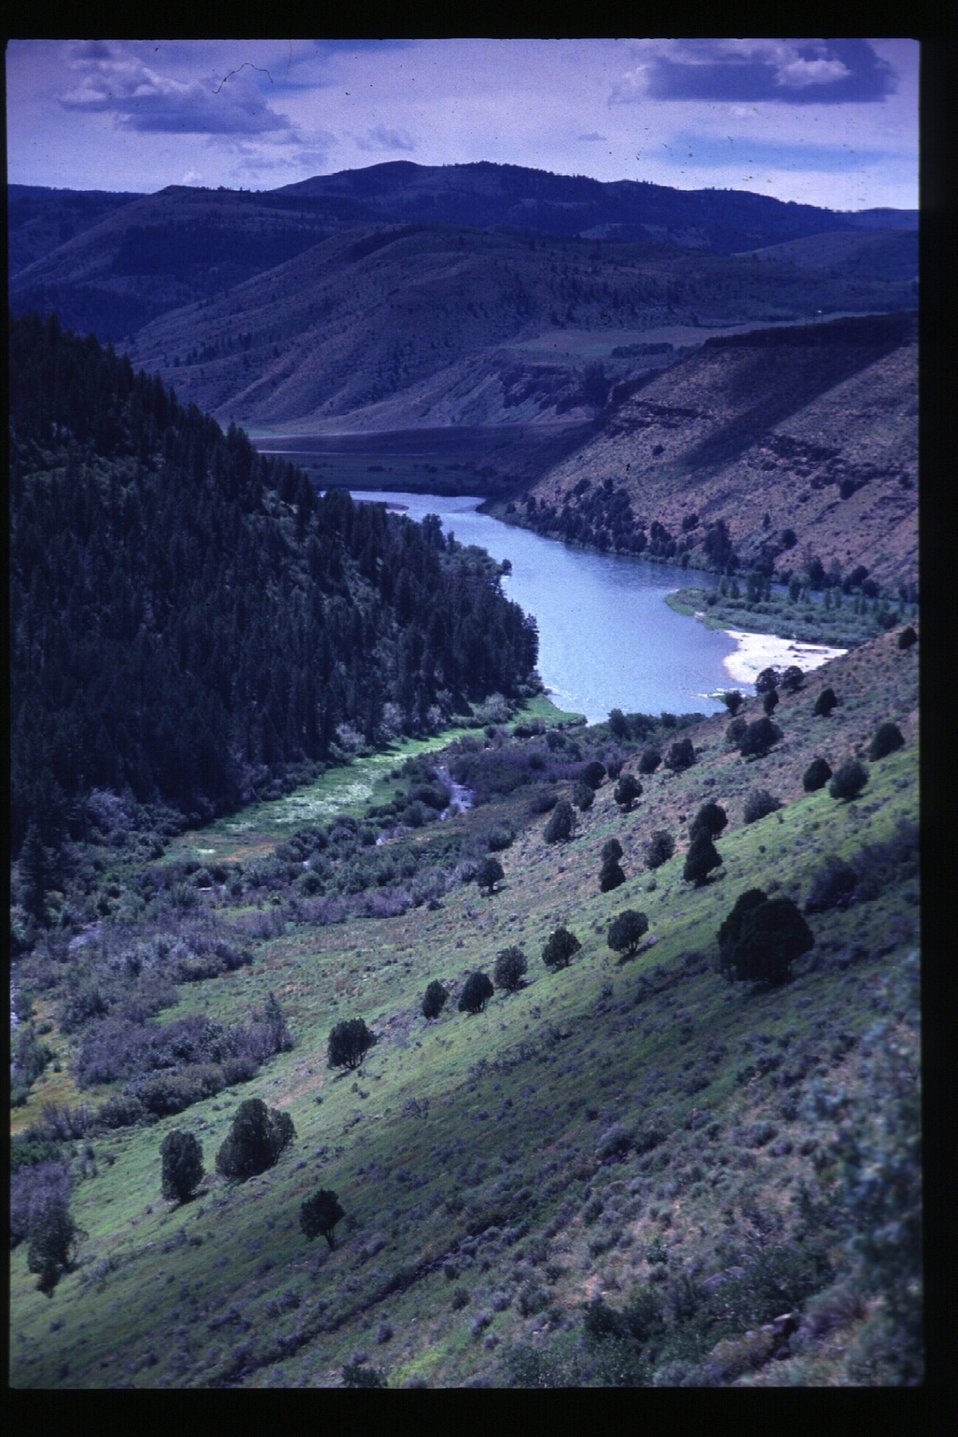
Scenic South Fork of Boise River Four Rivers Field Office LSRD Lower Snake River District